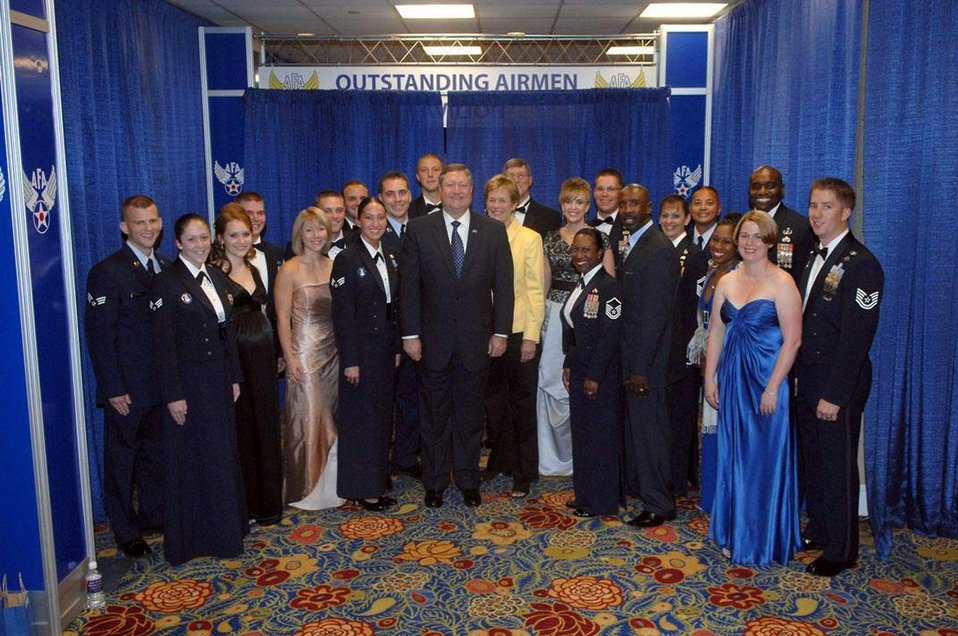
Air Force officials honor 12 Outstanding Airmen of the Year

Acting Secretary of the Air Force Michael B. Donley stands with the 12 Outstanding Airmen of the Year.